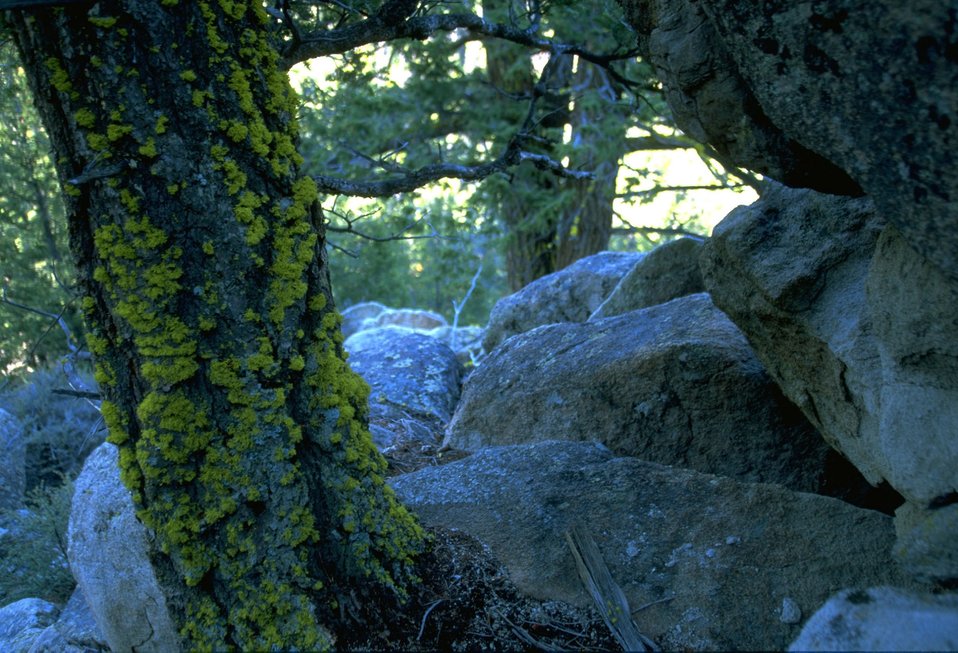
Closeup of moss growing on a tree trunk